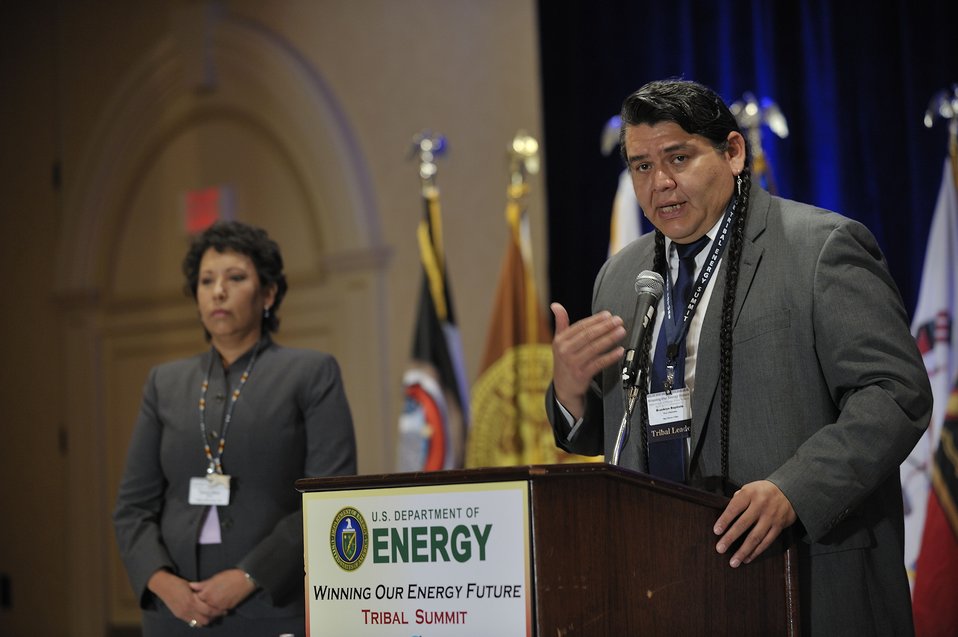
Tribal Energy Summit

Nez Perce Tribal Chairman Brooklyn Baptiste offers opening prayer after being introduced by Tracey LeBeau.